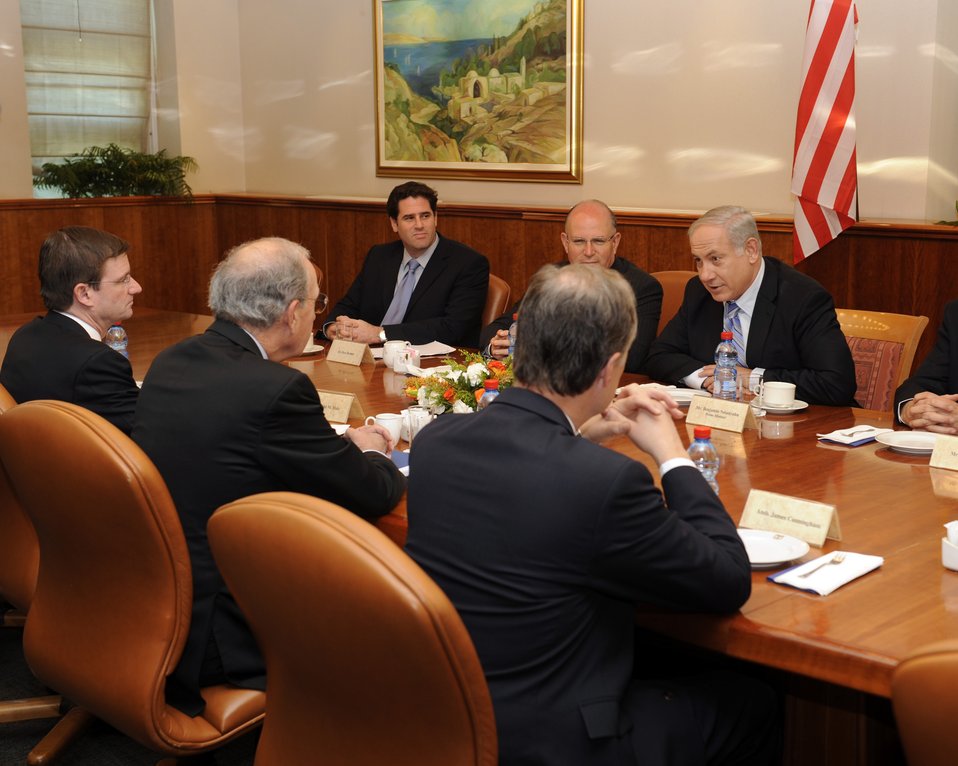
Special Envoy Mitchell Meets With Israeli Prime Minister Netanyahu

Special Envoy for Middle East Peace George Mitchell meets with Israeli Prime Minister Binyamin Netanyahu at the Prime Minister’s office, Jerusalem, May 5, 2010.